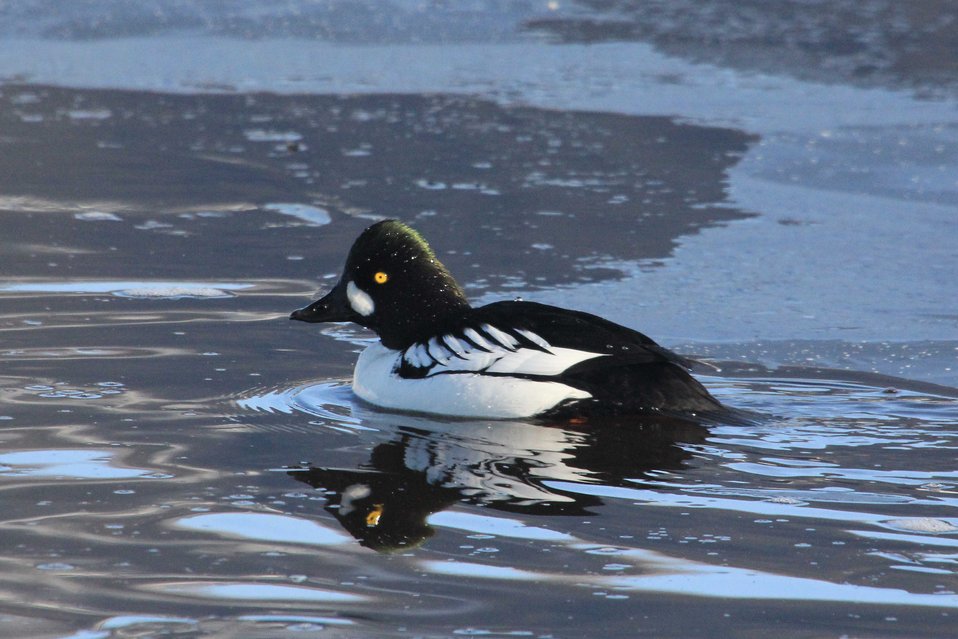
Barrow's Goldeneye

A Barrow's Goldeneye swims in the icy water of Flat Creek on the National Elk Refuge.

Credit: USFWS / Ann Hough, National Elk Refuge volunteer